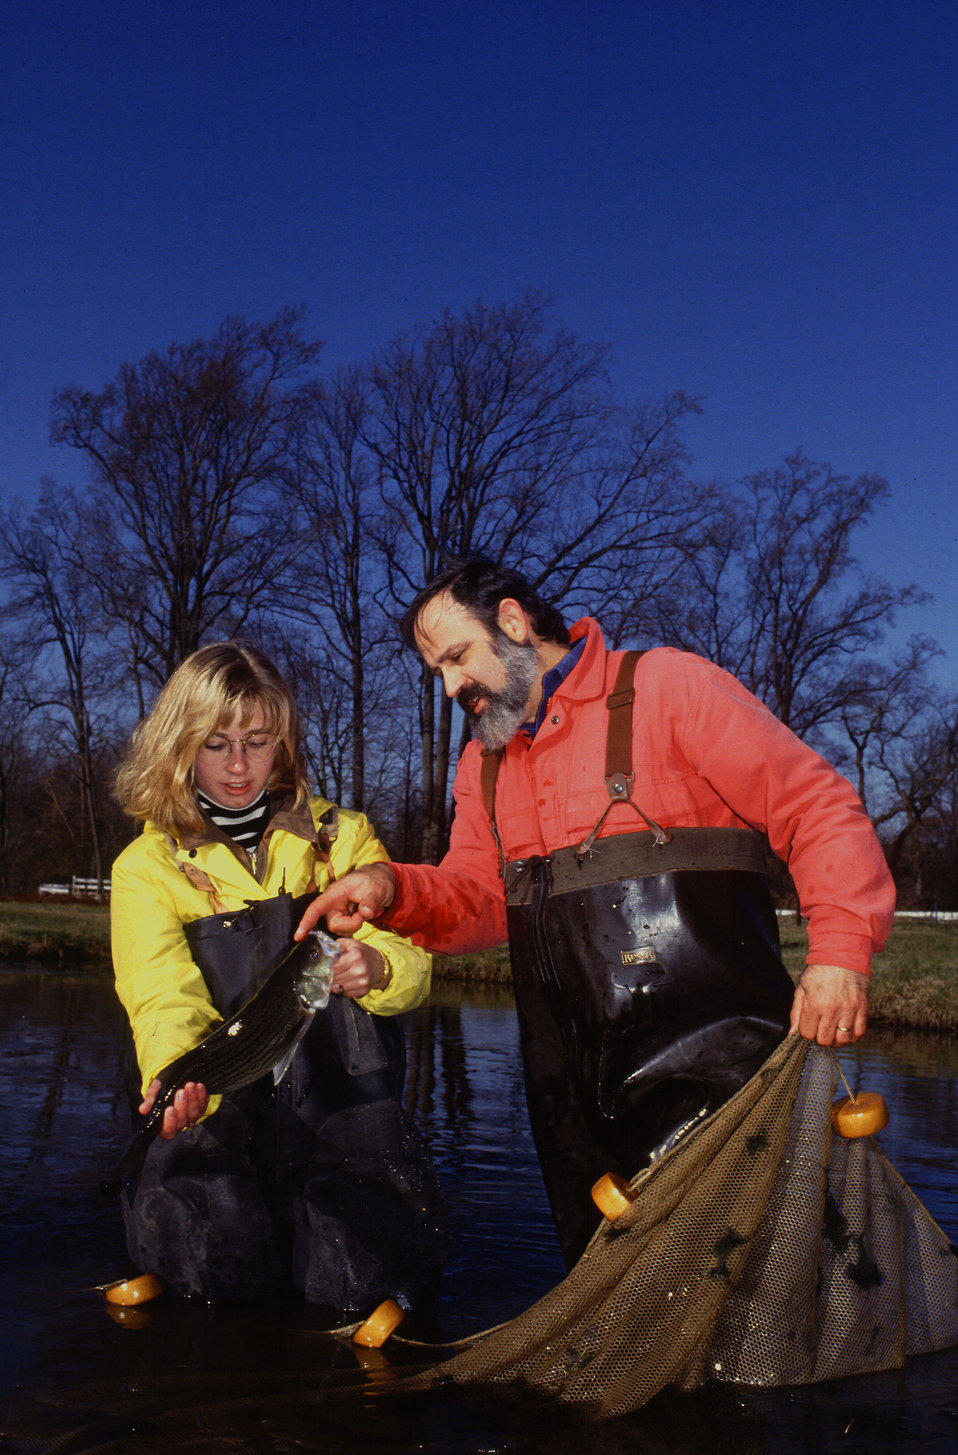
U.S. Department of Agriculture (USDA) Agricultural Research Service (ARS) research assistant professor Bernard Petrosky points out the qualities of a pond-raised hybrid striped bass to Delaware State University fisheries science student Jean Staats.